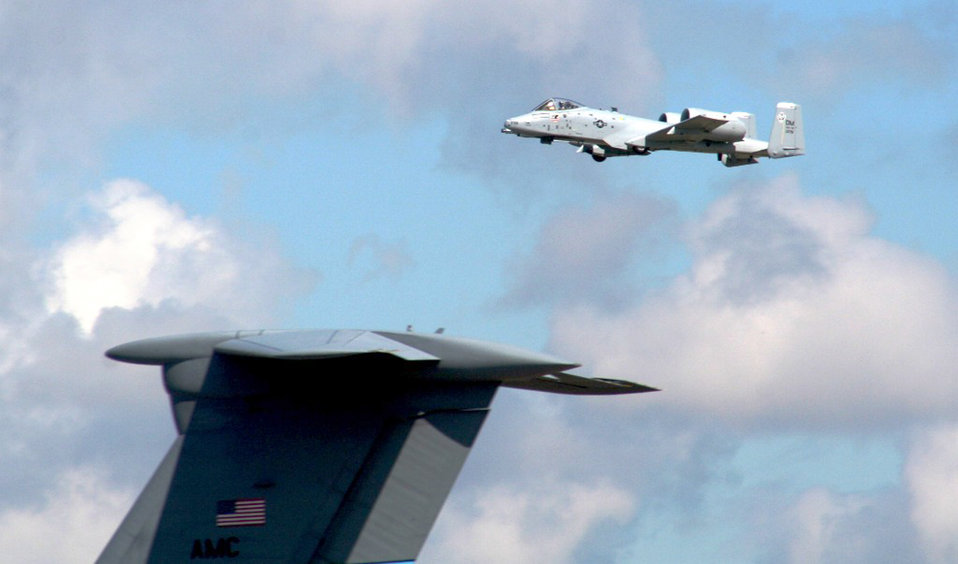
Scott AFB air show

An A-10 Thunderbolt II performs during the 2010 Airpower Over the Midwest Air Show Sept. 11, 2010, at Scott Air Force Base, Ill. Tens of thousands of people attended the two-day airshow.